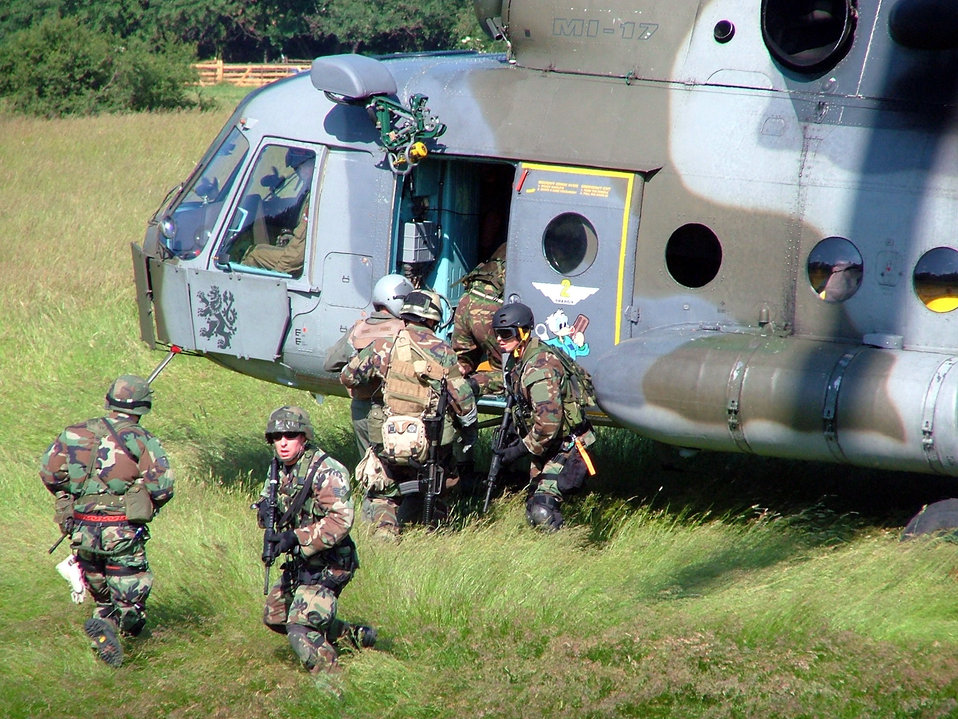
Another rescue

GEORG-FRIEDRICH KASERNE, Germany -- Staff Sgt. Frank Zentek (front) provides security while other members from his team, including a Czech Mi-17 Hip helicopter crew and parajumpers from the 56th Rescue Squadron and British forces, load a